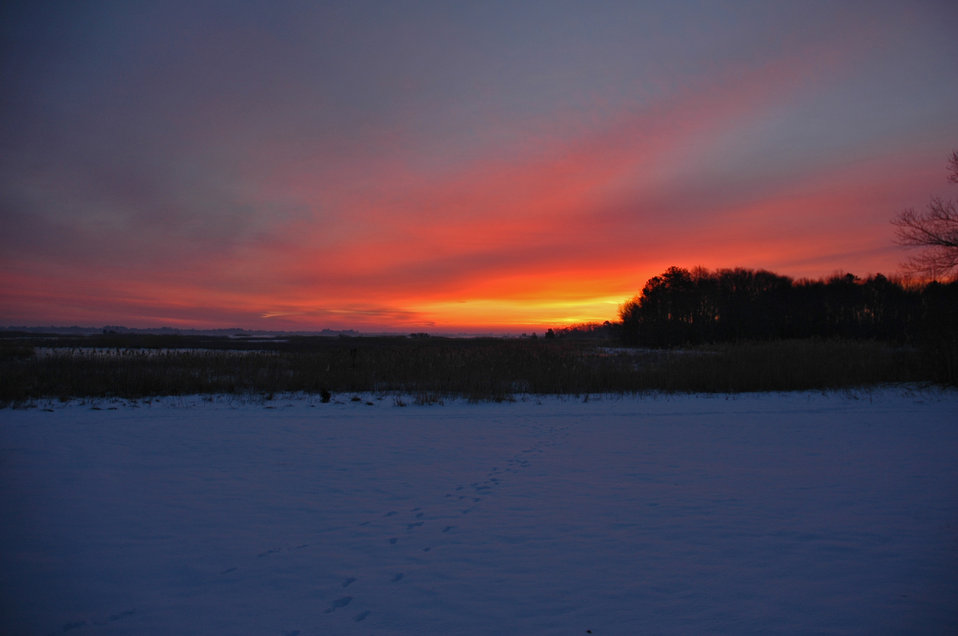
Sunrise in winter

Winter sunrise at Prime Hook National Wildlife Refuge.